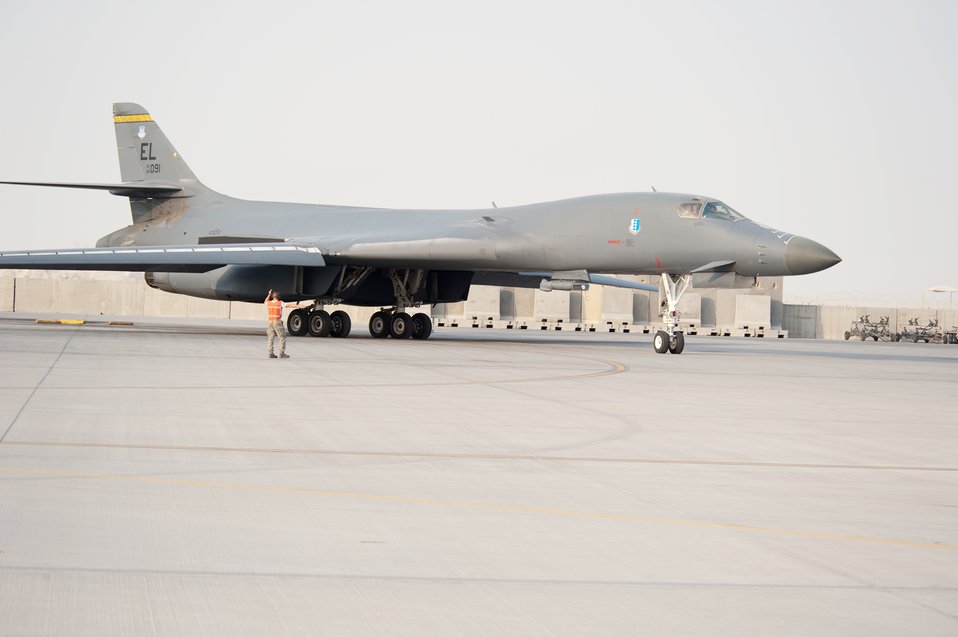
Checking out the B-1B for combat

Staff Sgt. Daniel Gordon marshals a B1-B Lancer as it taxis at an air base in Southwest Asia before a combat mission Nov. 11, 2009. The multi-mission B-1 is the backbone of America's long-range bomber force. Sergeant Gordon is with the 37th Aircraft Maintenance Unit.